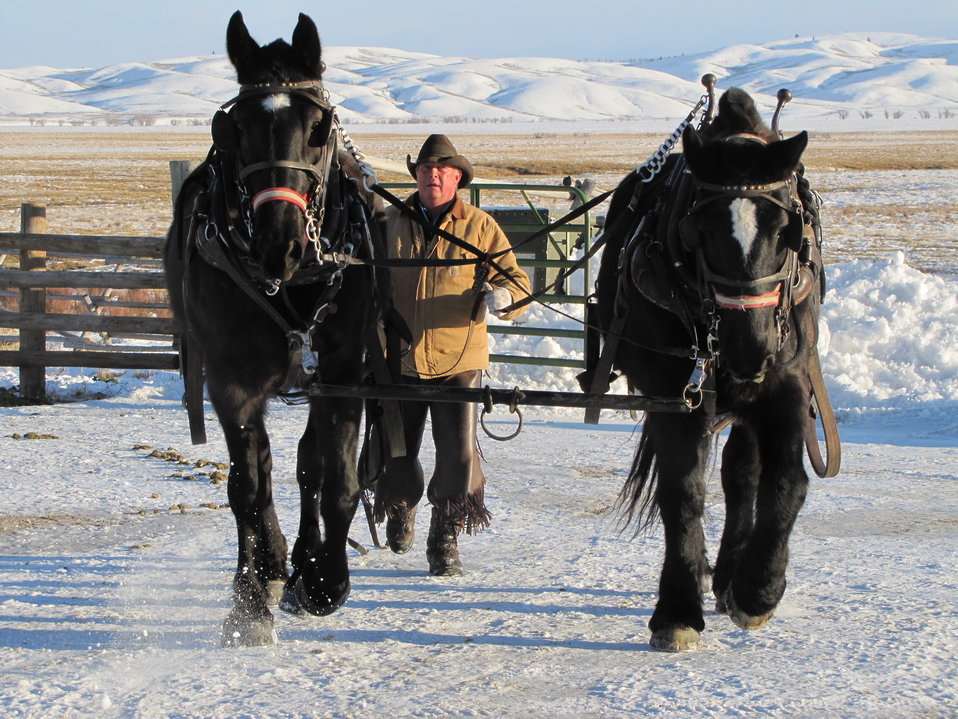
Ready for Work

After the horses are harnessed, they are led over to be hitched to a sleigh.